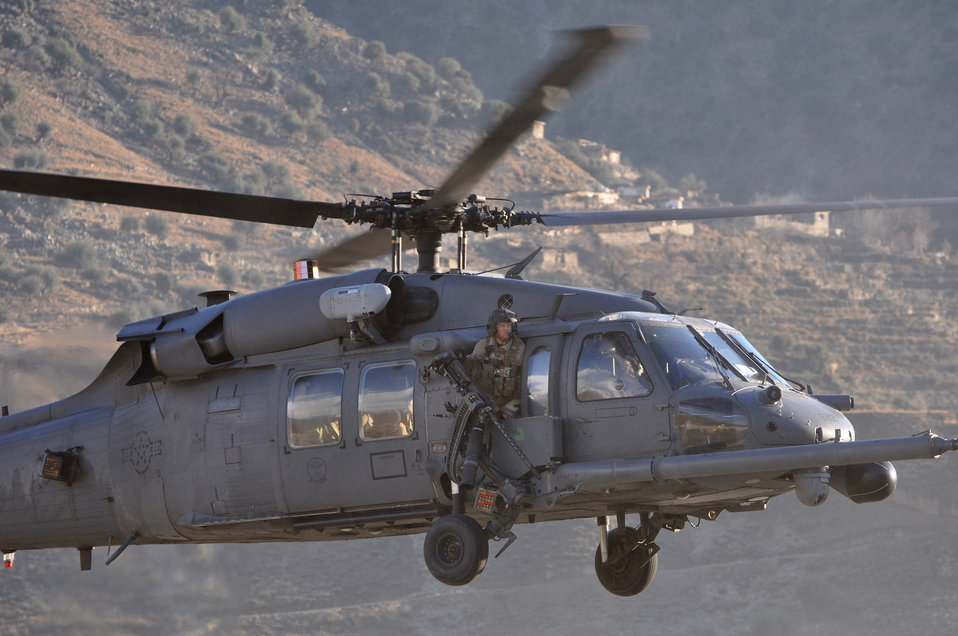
Pedros

An HH-60G Pave Hawk assigned to the 83rd Expeditionary Rescue Squadron at Bagram Airfield, Afghanistan, arrives at a remote forward operating base in Afghanistan's Kunar province. The squadron members occasionally reposition personnel and aircraft to FOBs to provide casualty evacuation support to planned ground operations.